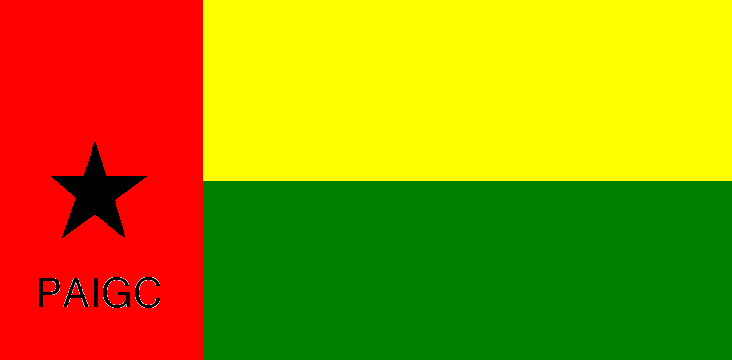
The flag of PAIGC (Partido Africano para a Independência da Guiné e Cabo-Verde). Emerson